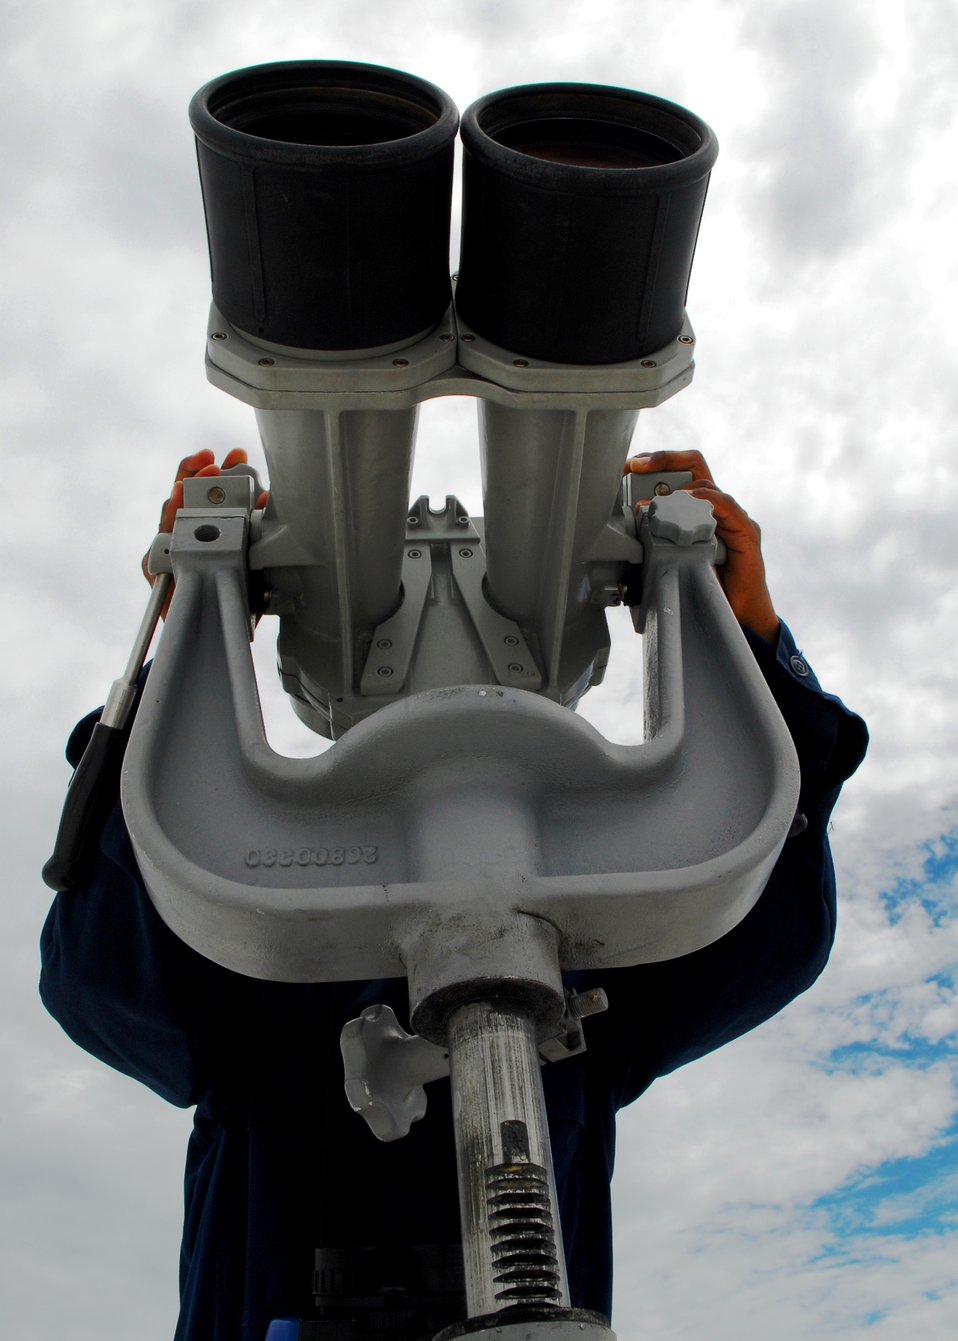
Ordinary Seaman Catalan Looks Through the “Big Eyes” Binoculars

Ordinary Seaman Roberto Catalan, a civilian mariner embarked aboard the Military Sealift Command hospital ship USNS Mercy (T-AH 19), looks through the “big eyes” binoculars while Mercy transits the South China Sea on July 5, 2010, en route to Indonesia in support of Pacific Partnership 2010, the fifth in a series of annual U.S. Pacific Fleet humanitarian and civic assistance endeavors to strengthen regional partnerships.